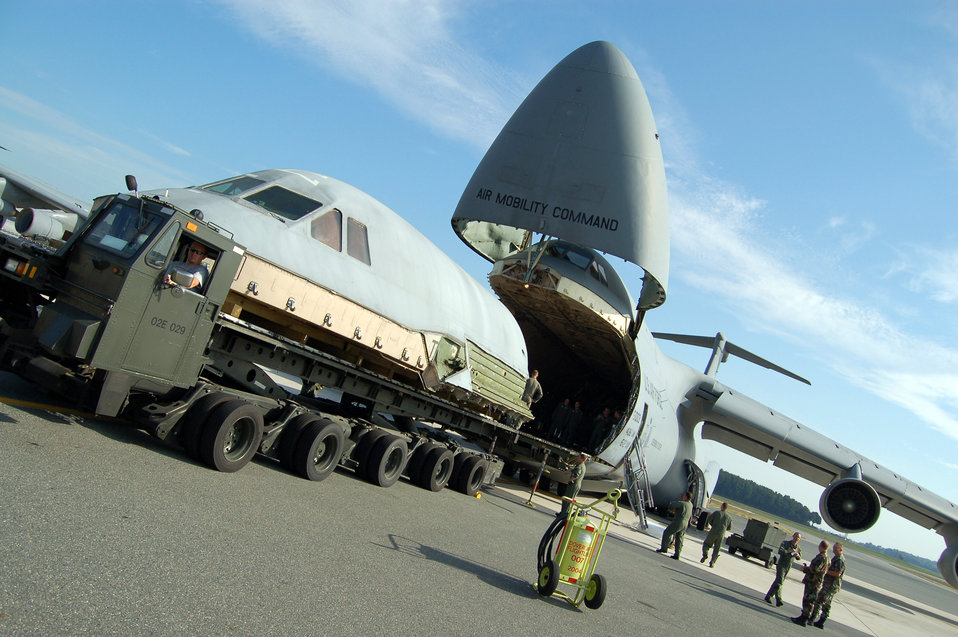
Salvaged flight deck from C-5 mishap becomes tool

Airmen from Dover Air Force Base, Del., load a C-5 Galaxy flight deck onto another C-5 for transport to Robins Air Force Base, Ga., Aug. 22. The flight deck from the C-5 that crashed April 3 will be used as a simulator to help train and test aircrews.